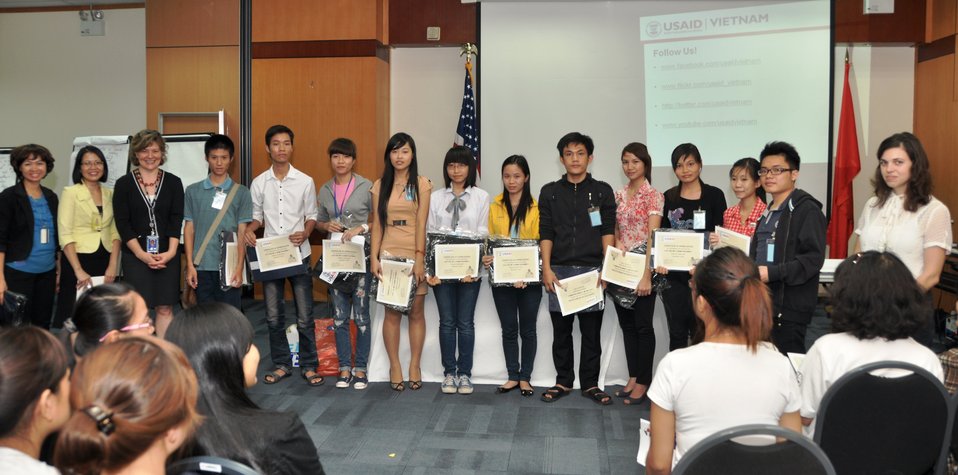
Students join the ‘USAID and Higher Education in Vietnam’ talk

Photo: @USAIDVietnam, November 19, 2012